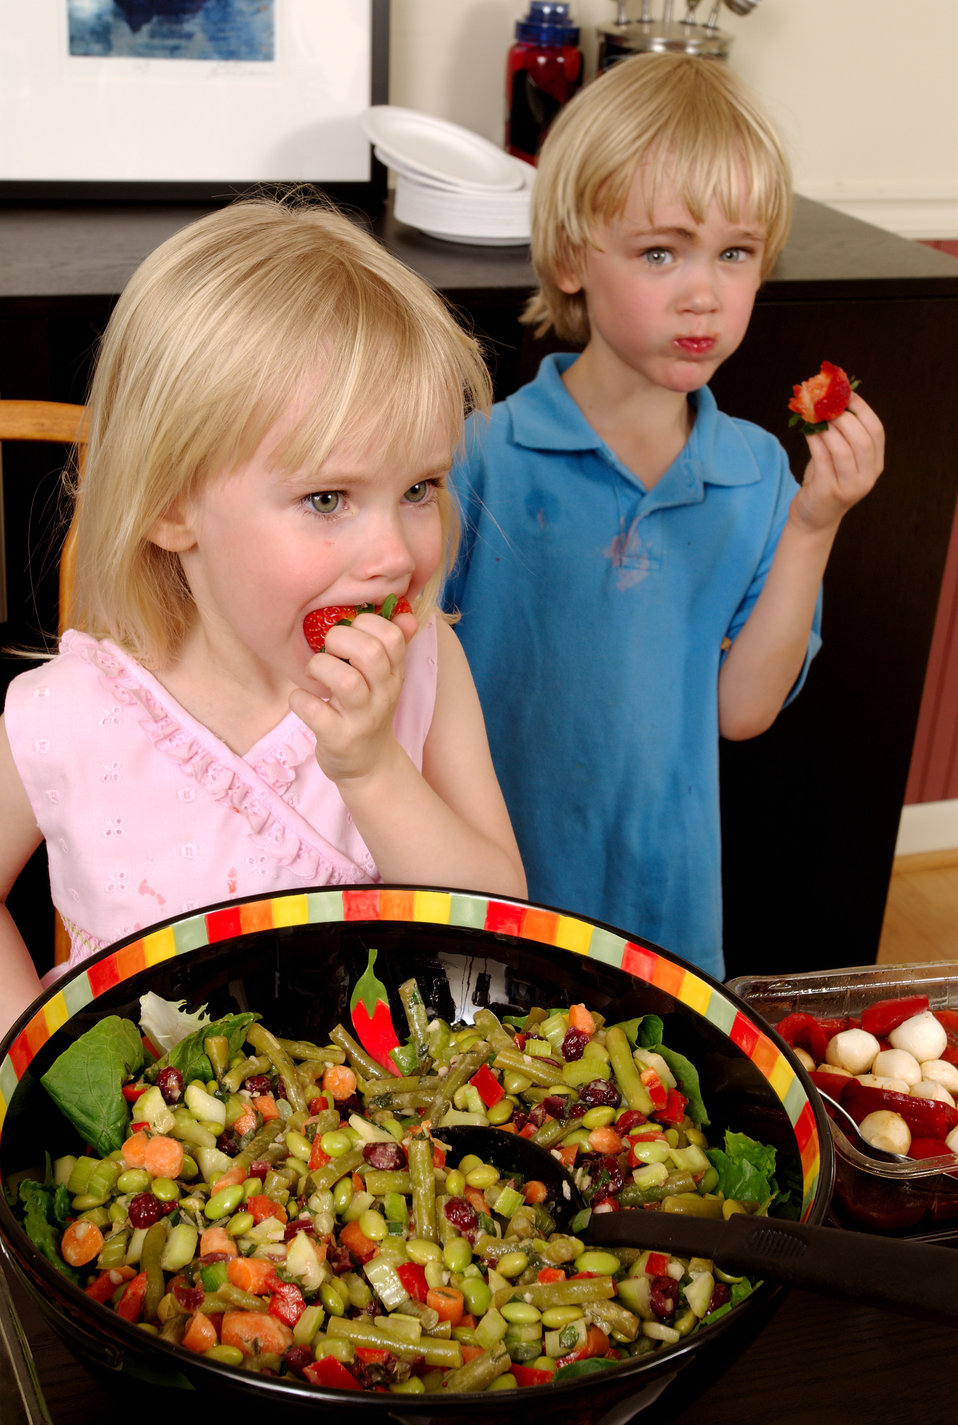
Here, two young children were at a dining table, upon which was plated a large quantity of foods representing a number of different food groups: grains, fruits, vegetables, milk products, meats/poultry/fish, and nuts/seeds/legumes. All these foods are quite tasty, but some are more nutrient-dense than others, while others are more calorie-dense than the rest. It's refreshing to see that these children made the choice to eat a highly-nutritious, antioxidant, vitamin-rich strawberry over some of the more calorie-dense foods that were freely available.